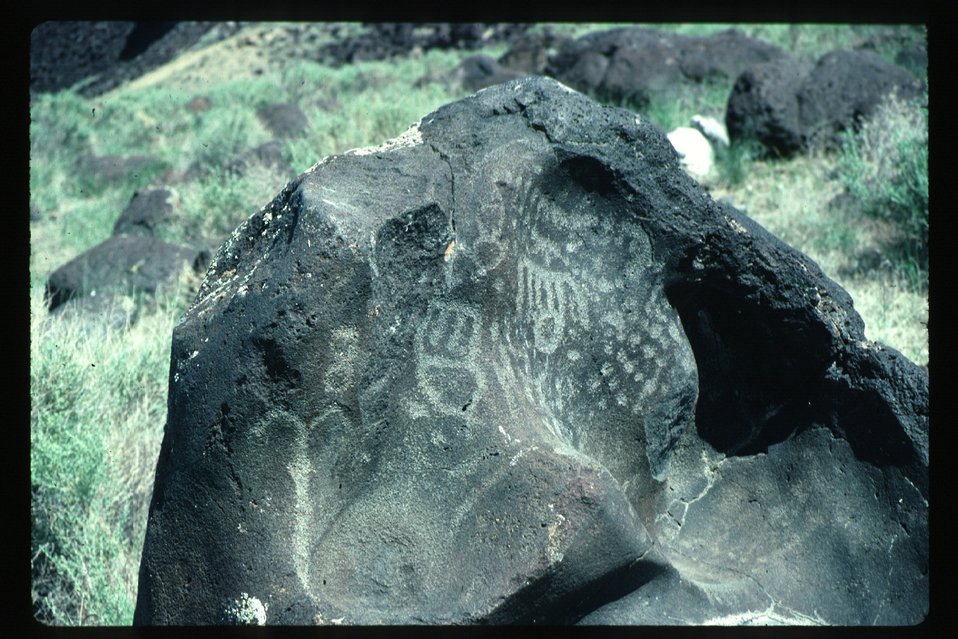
Petroglyphs Archeology LSRD Lower Snake River District